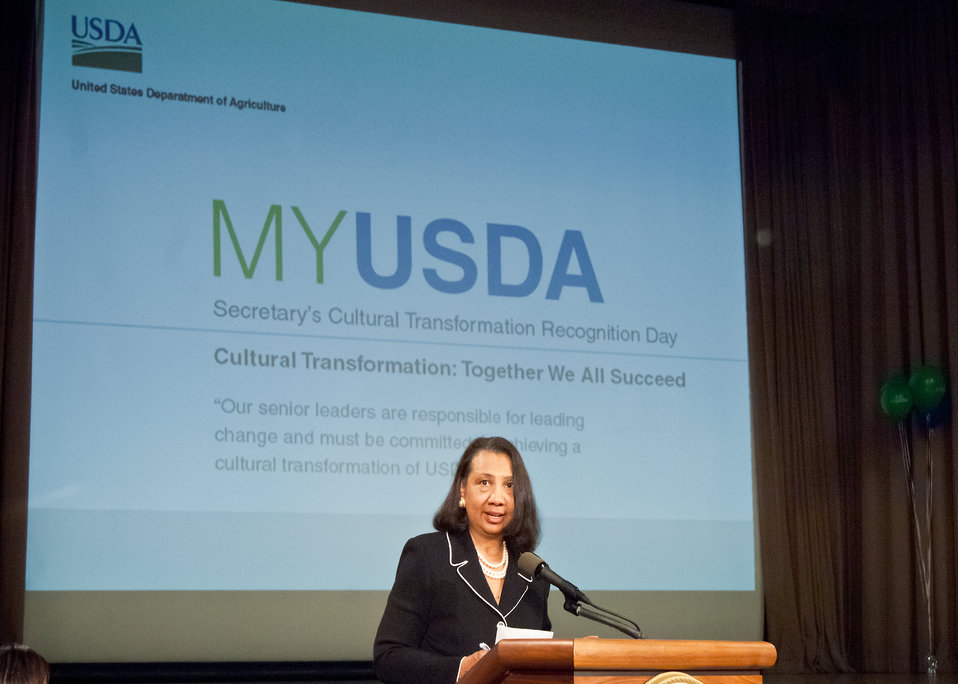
Dr. Alma Hobbs, Associate Assistant Secretary for Administration addresses U.S. Department of Agriculture employees during the Cultural Transformation Recognition Ceremony at the Jefferson Auditorium, US Department of Agriculture in Washington, DC, on Tuesday, October 4, 2011. Cultural Transformation is the process of creating a workplace where all employees and customers are treated with dignity, respect and the opportunity for success. Recognizing the important contributions of all employees to the operation of the United States Department of Agriculture. The goal of cultural transformation is to get everyone at USDA – from the Under Secretaries to employees at every grade level, in every location - to ensure USDA is a place where there’s opportunity for all to reach their full potential. Only then can USDA provide its customers with exceptional service in an equitable manner.